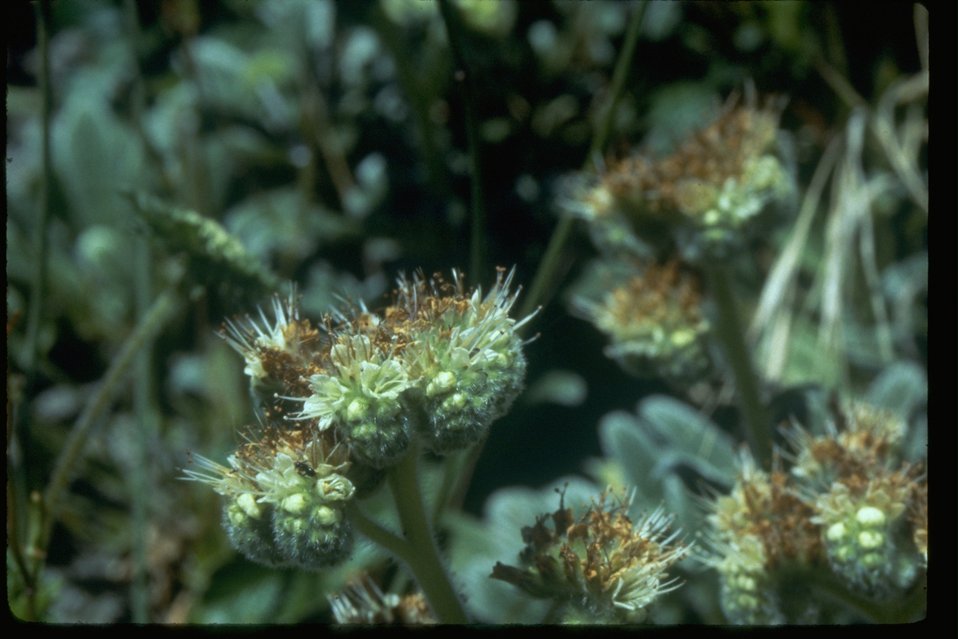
Silvery Phacelia (Pharelis argentea).